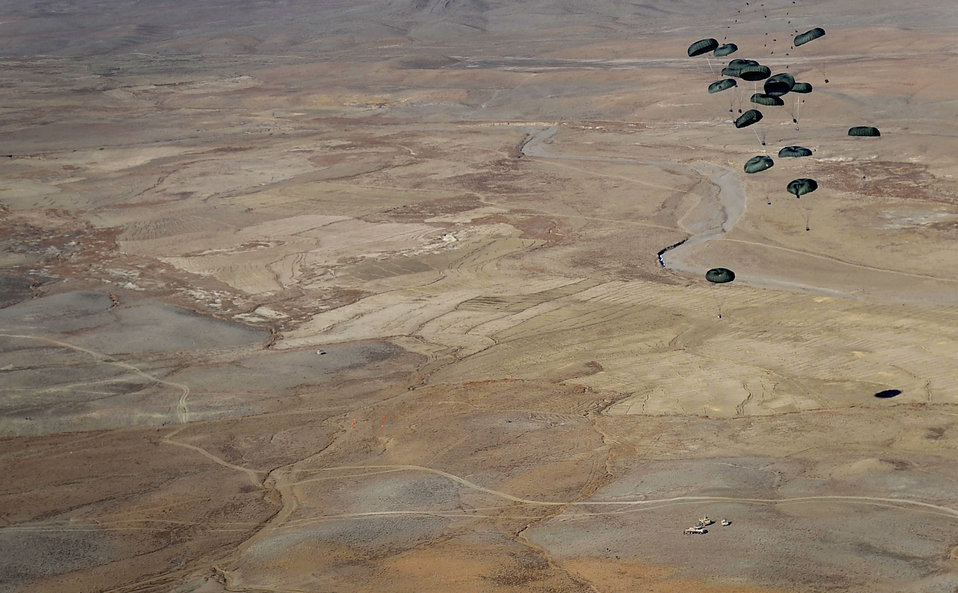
Airmen, Soldiers airdrop supplies to Afghanistan

Container delivery system bundles descend toward a drop zone in Afghanistan Jan. 9, 2010. A C-17 Globemaster III aircrew, assigned to the 816th Expeditionary Airlift Squadron, loaded and air dropped the bundles to U.S. ground forces.